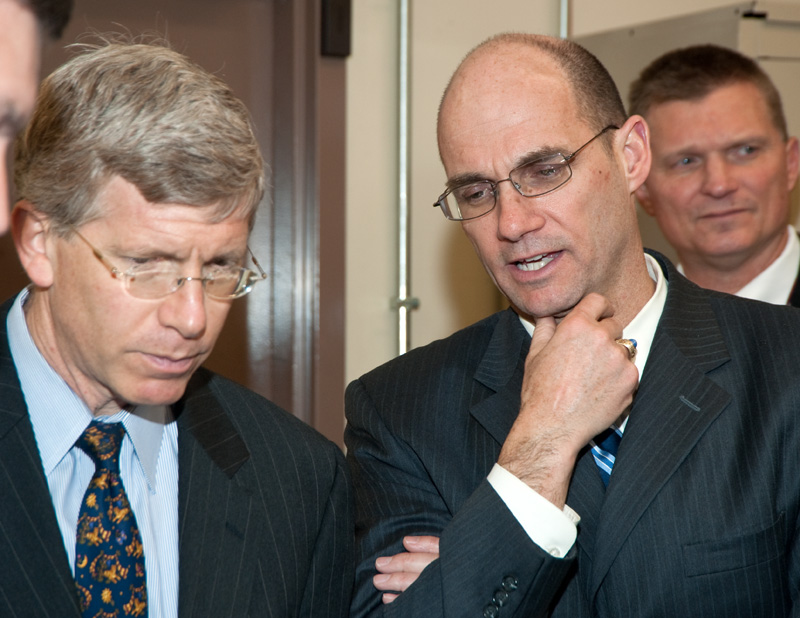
The Deputy Secretary and Administrator toured the Arming Fuzing & Firing (AF&F) and Stronglink Mechanisms areas at KCP.